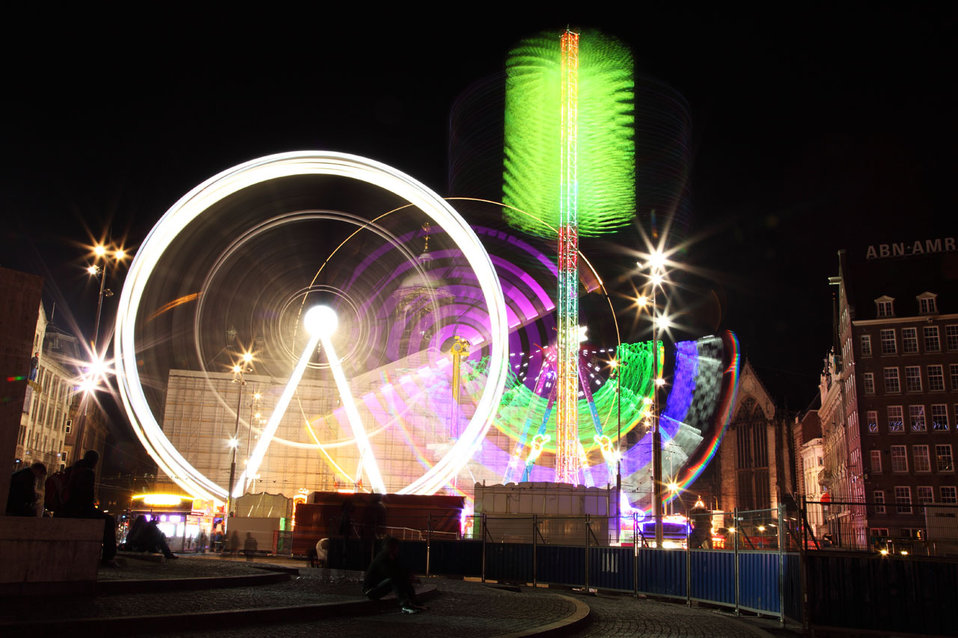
Carousel light trails in amsterdam.